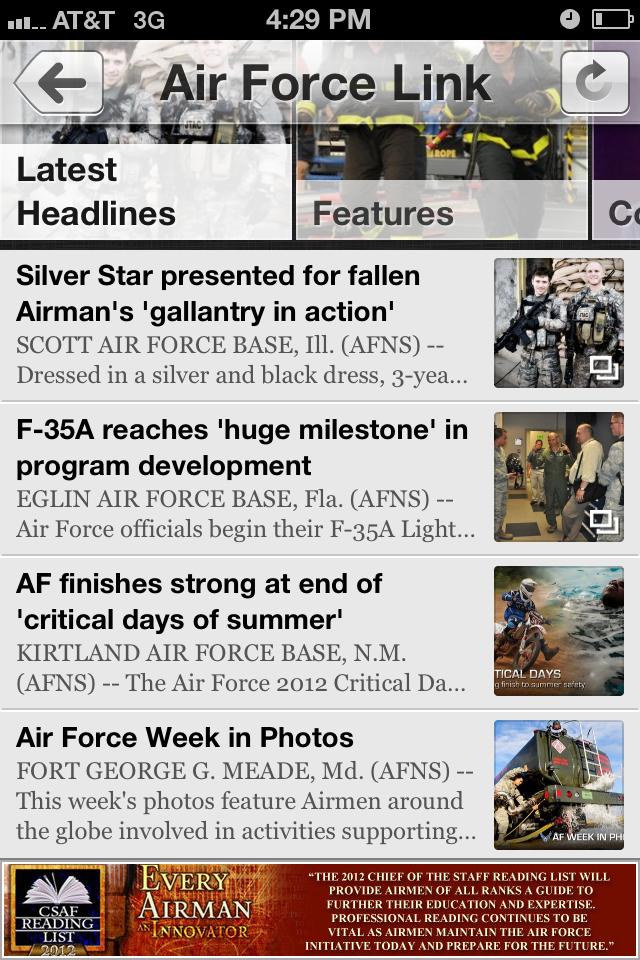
AFLINK mobile application now available

AFLINK mobile application users will also have access to Air Force news.